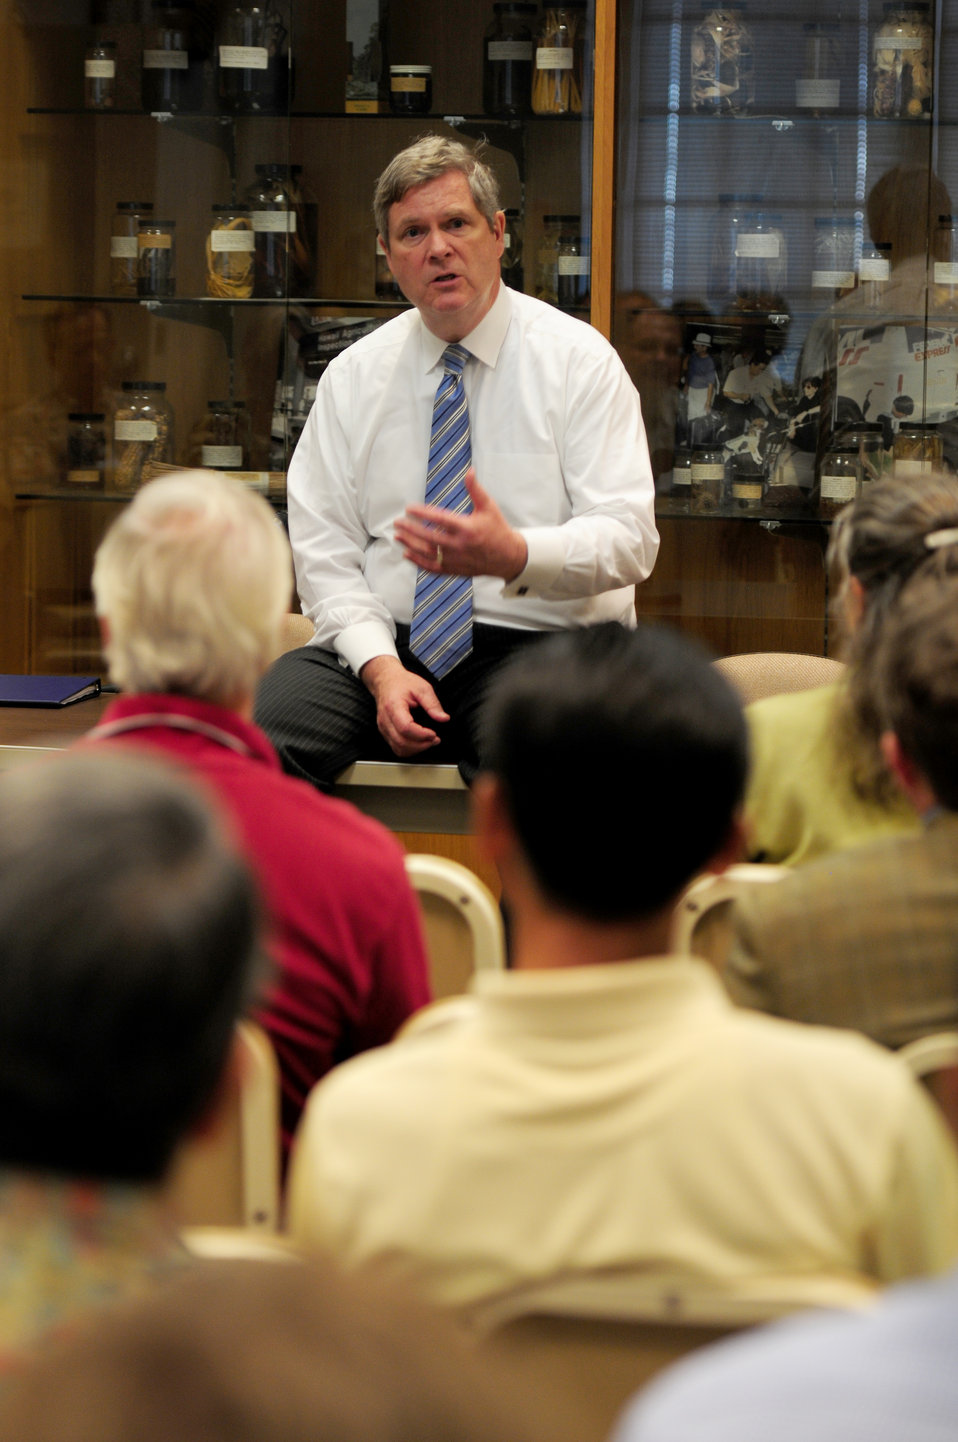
Agriculture Secretary Tom Vilsack speaks at a stakeholder meeting held at the State of Hawaii, Department of Agriculture Plant Quarantine Building in Honolulu, Hawaii, on Tuesday, January 10, 2012, to discuss USDA programs, agricultural challenges in Hawaii, and alternative energy.